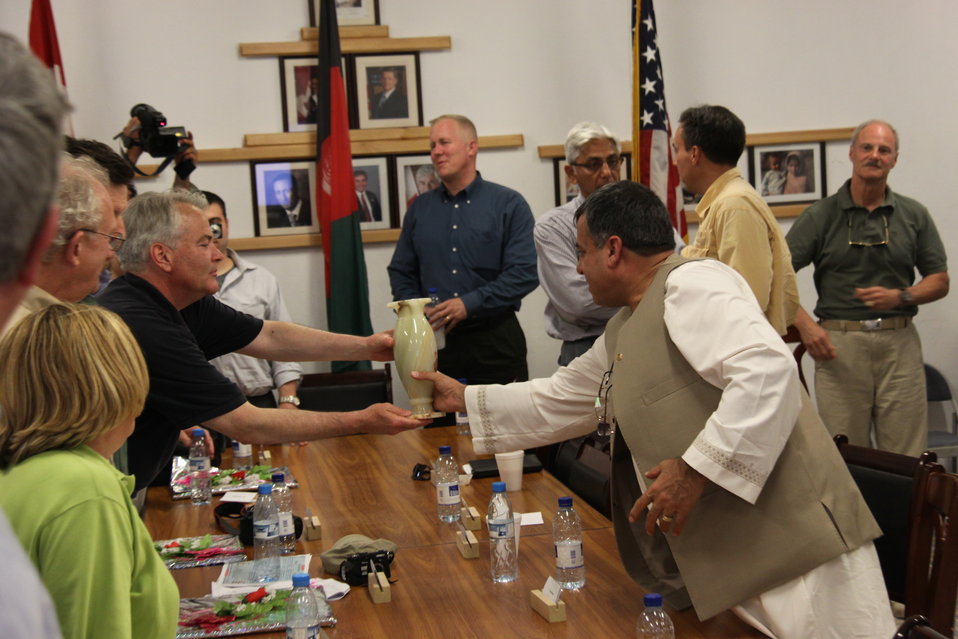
Meeting with Local Leaders in Kandahar